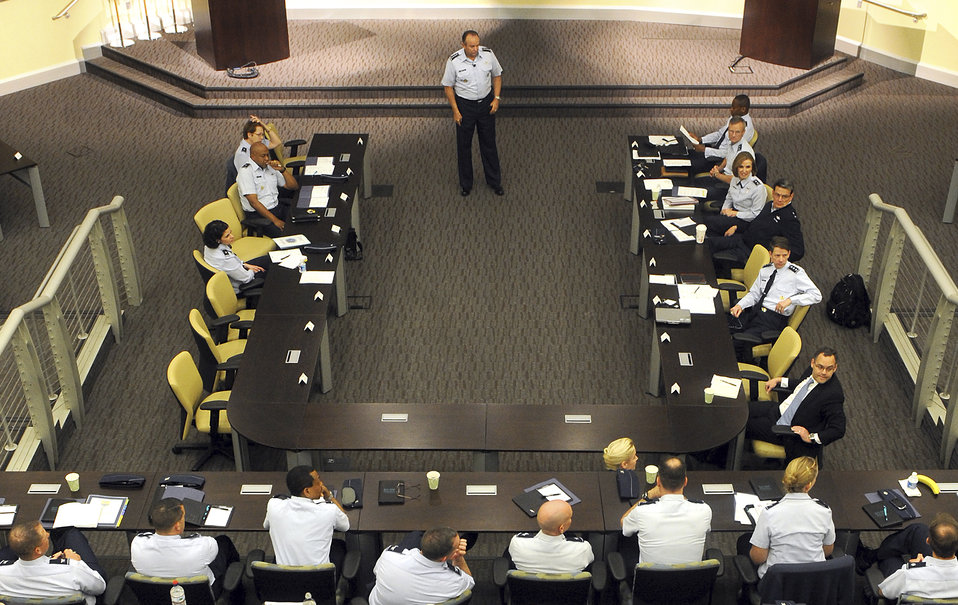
AF leaders gather to address sexual assault prevention, response

Gen. Phillip Breedlove speaks to attendees of the Sexual Assault Prevention and Response Leader Summit at the Smart Building April 17, 2012 at Joint Base Andrews, Md. Breedlove is the Air Force Vice Chief of Staff.